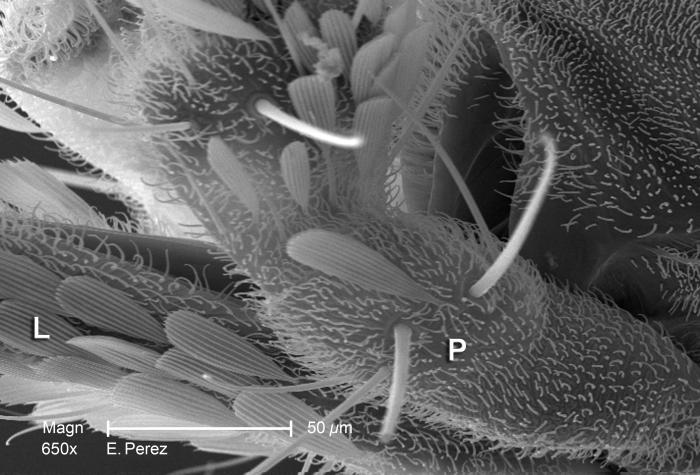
Magnified 650X, this scanning electron micrograph (SEM) is the third of three SEMs (see PHIL 10560, 10561) that are viewed under successively greater magnifications, while focusing on the cephalic, or head region of an unidentified mosquito discovered deceased in the Decatur, Georgia suburbs.